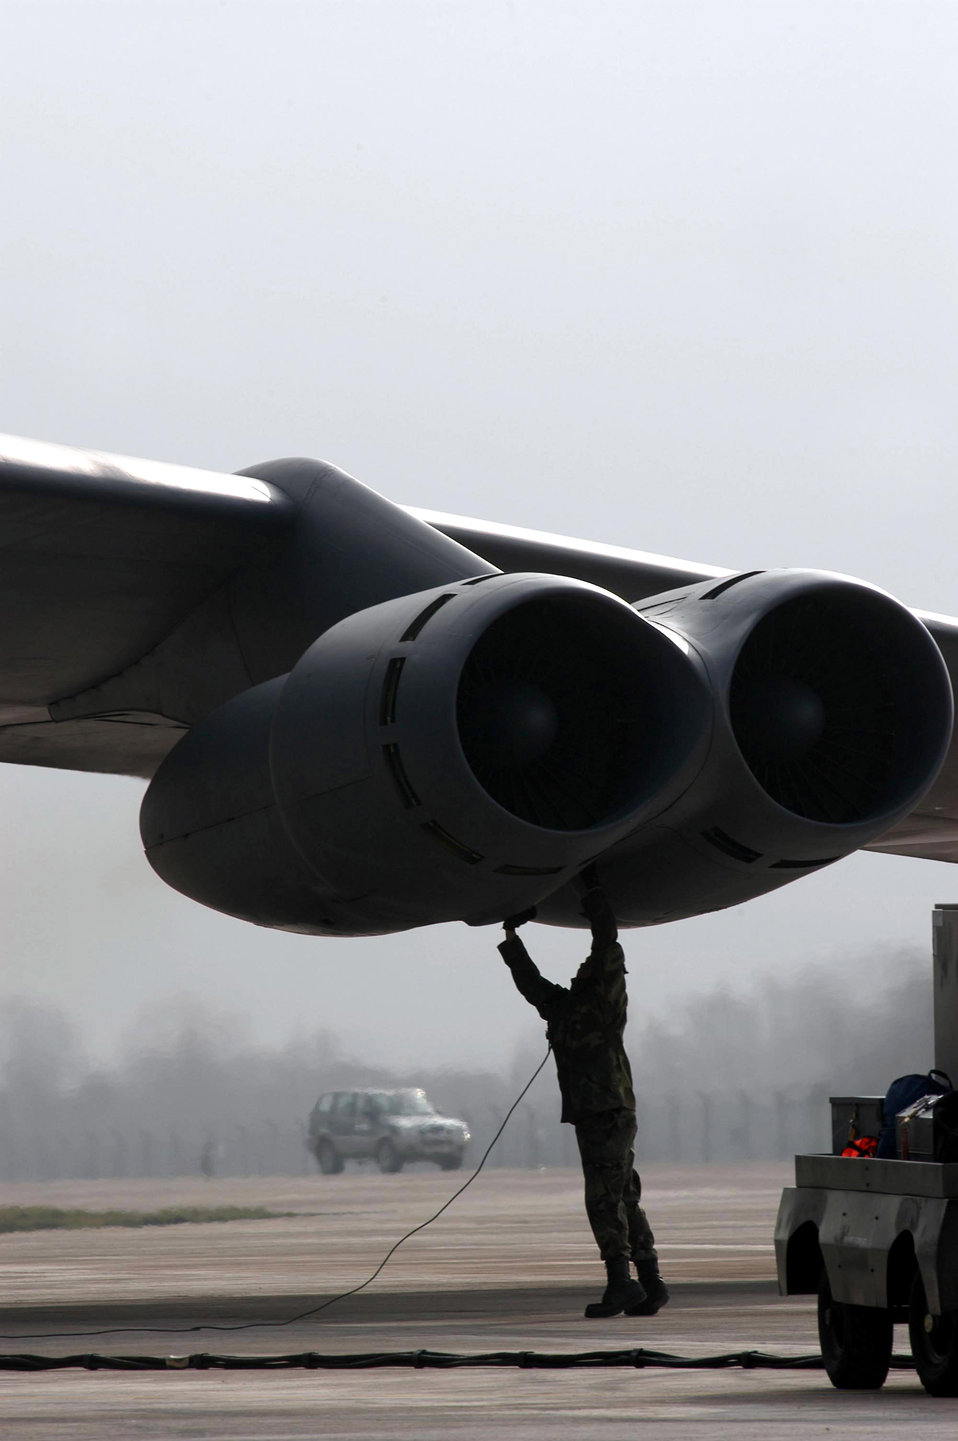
Menguita

OPERATION IRAQI FREEDOM -- Airman 1st Class Joy Menguita checks the running engines of a B-52 Stratofortress nicknamed